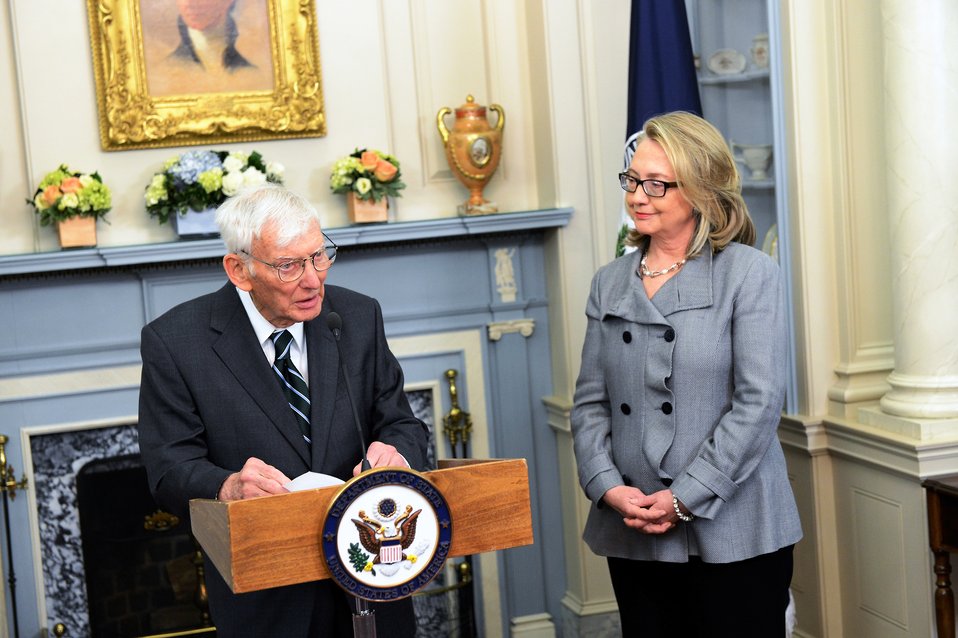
Secretary Clinton Participates in a Flag Ceremony for Ambassador Rooney

U.S. Secretary of State Hillary Rodham Clinton participates in a Flag Ceremony for U.S. Ambassador to Ireland Dan Rooney at the U.S. Department of State in Washington, D.C., January 9, 2013.